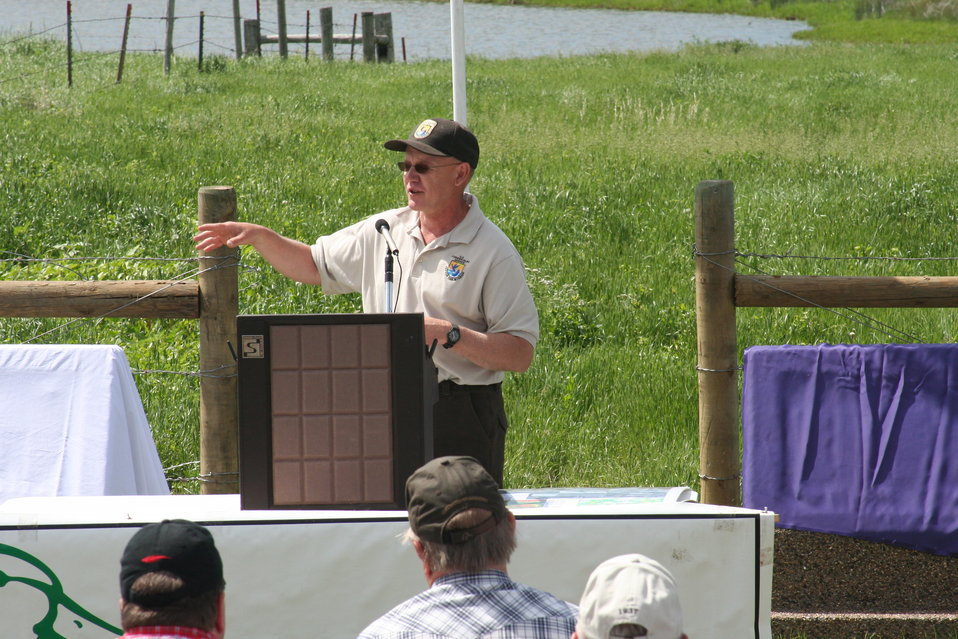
2013 Green Wing Dedication 031

Huron WMD Project Leader Clarke Dirks speaking at Harter/Cowan WPA for Green Wing Dedication.